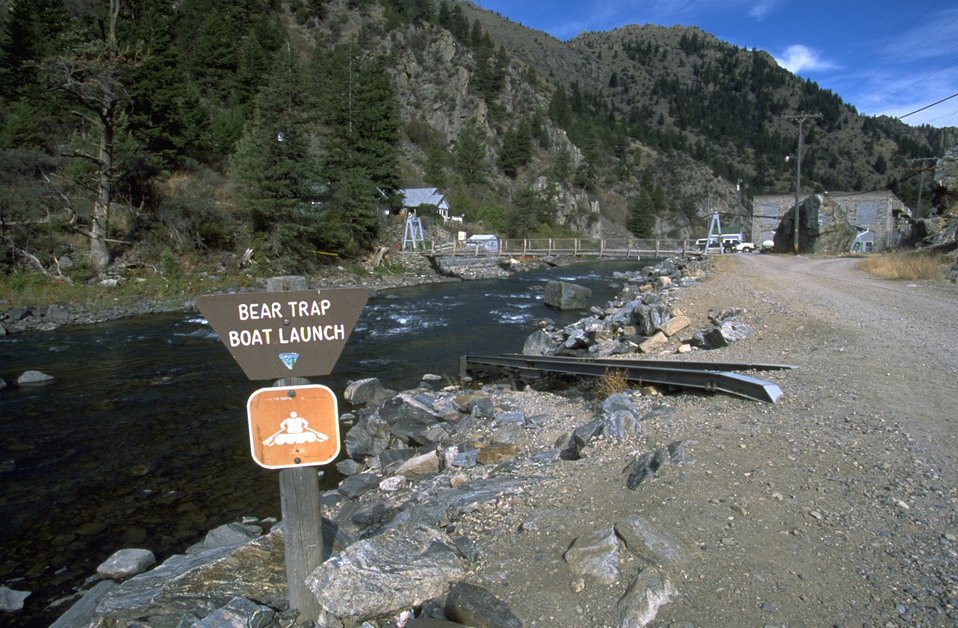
Bear Trap Boat Launch with Foot Bridge in background